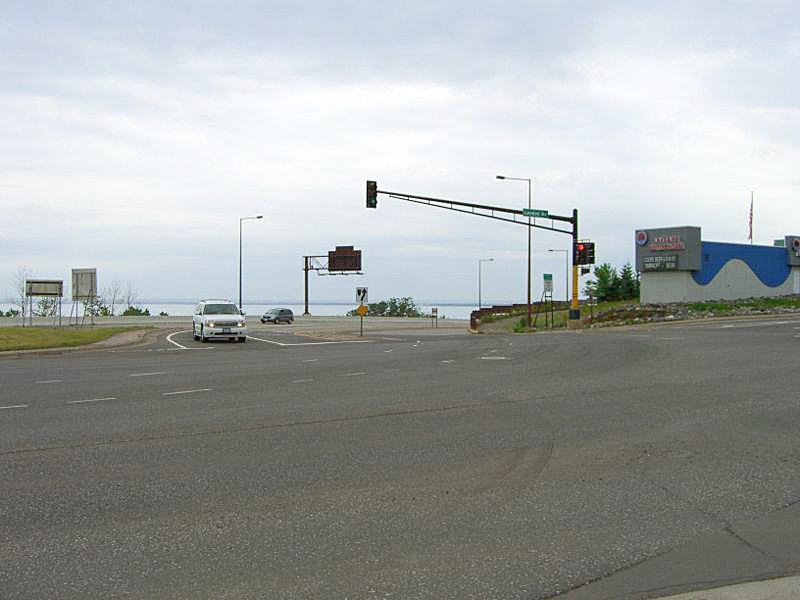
Northern terminus of en:Interstate 35 at London Road in en:Duluth, Minnesota. en:Lake Superior visible in background. en:Category:Images of Minnesota